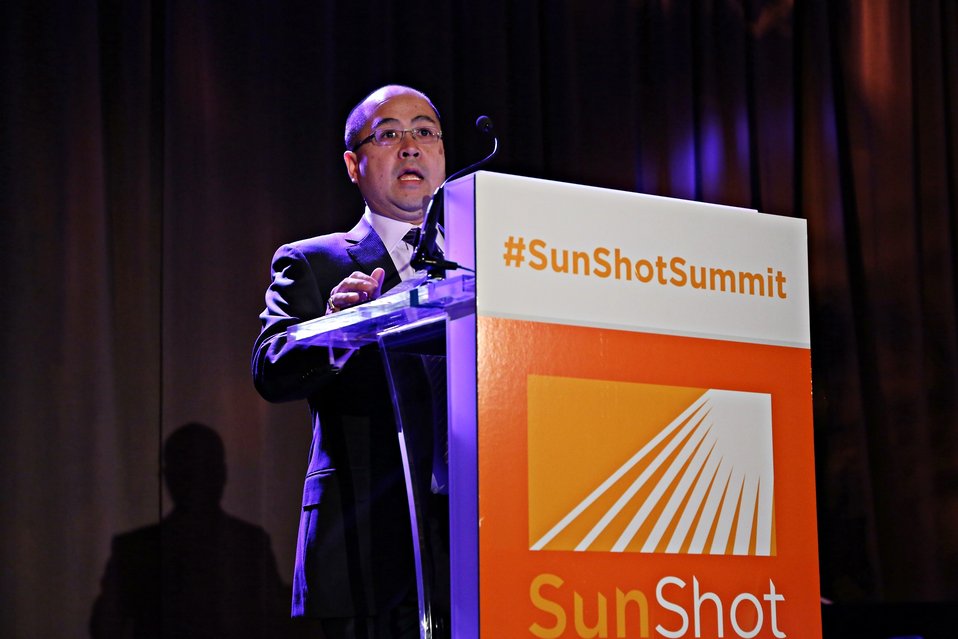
Day 2 Keynote Session 1

SunShot Director Minh Le provides opening remarks for day two.